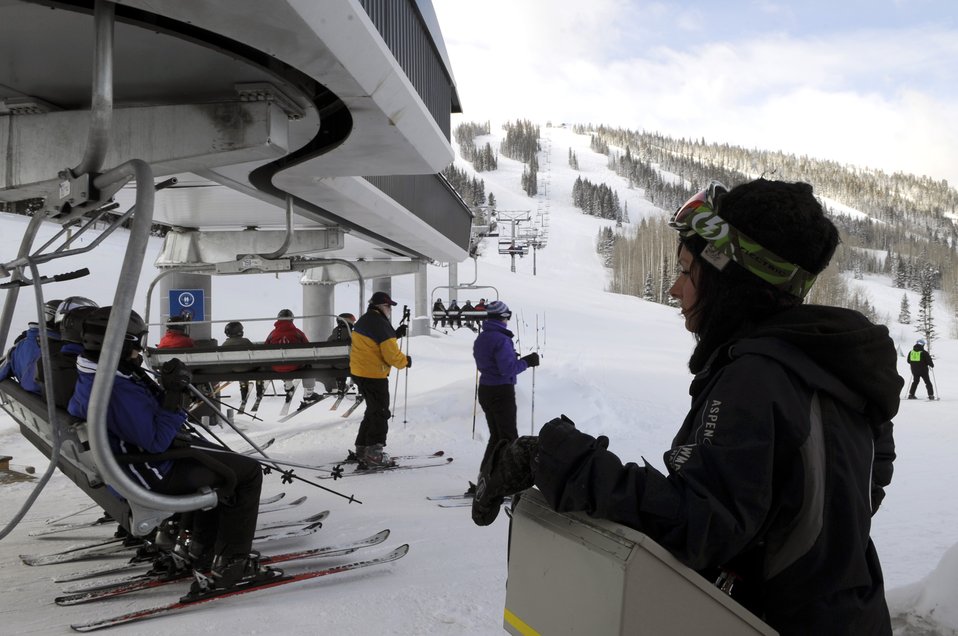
23rd National Disabled American Veterans Winter Sports Clinic

Veterans and people from all over the world ride the ski lift to Sam's Knob Mar. 31 during the 23rd National Disabled American Veterans Winter Sports Clinic in Snowmass Village, Colo.